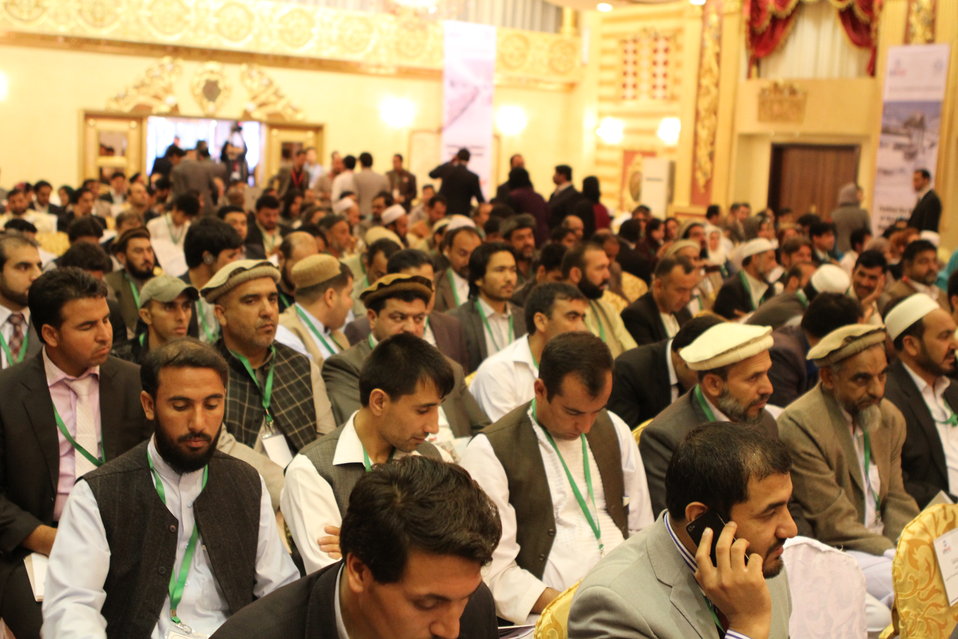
A2F Exhibition